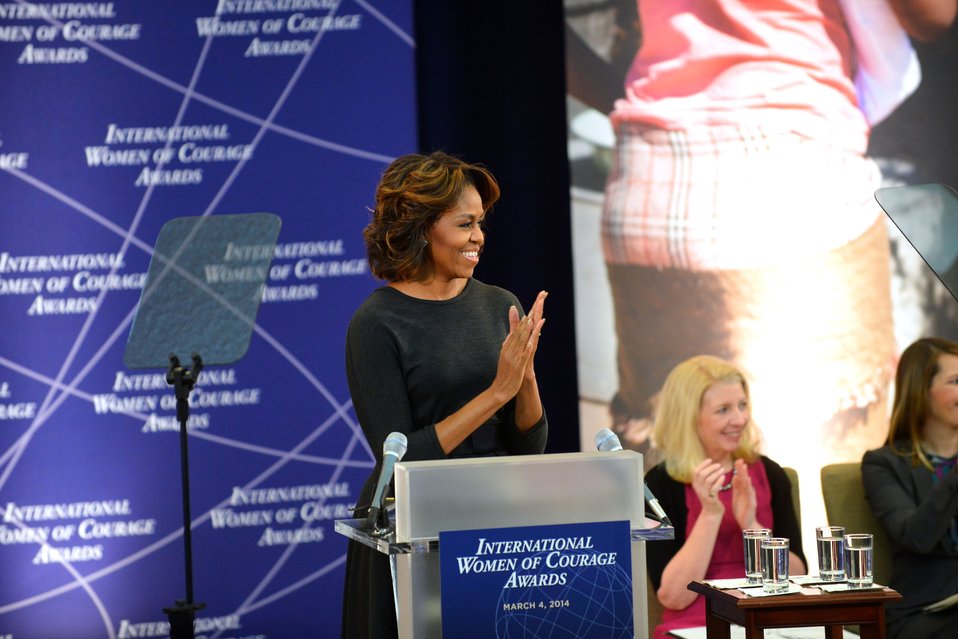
First Lady Michelle Obama Honors the International Women of Courage

First Lady Michelle Obama honors extraordinary women from 10 countries with the 2014 Secretary of State’s International Women of Courage Award at the U.S. Department of State in Washington, D.C., on March 4, 2014.